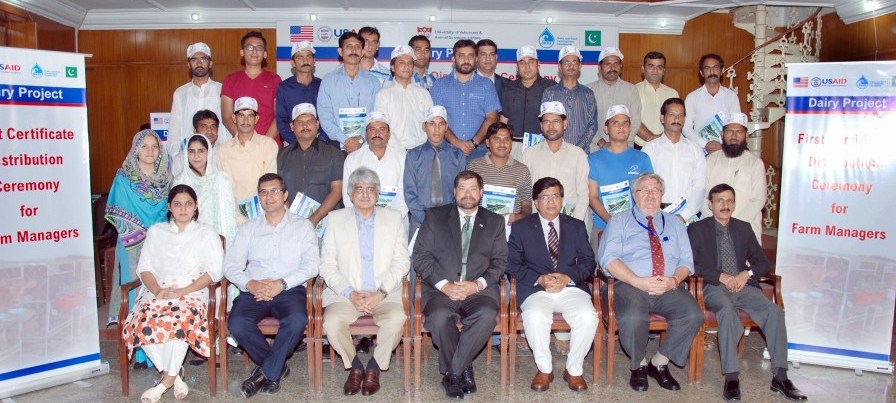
USAID Mission Director Punjab Mr. Jeffrey Bakken with trainees at the certificate distribution ceremony